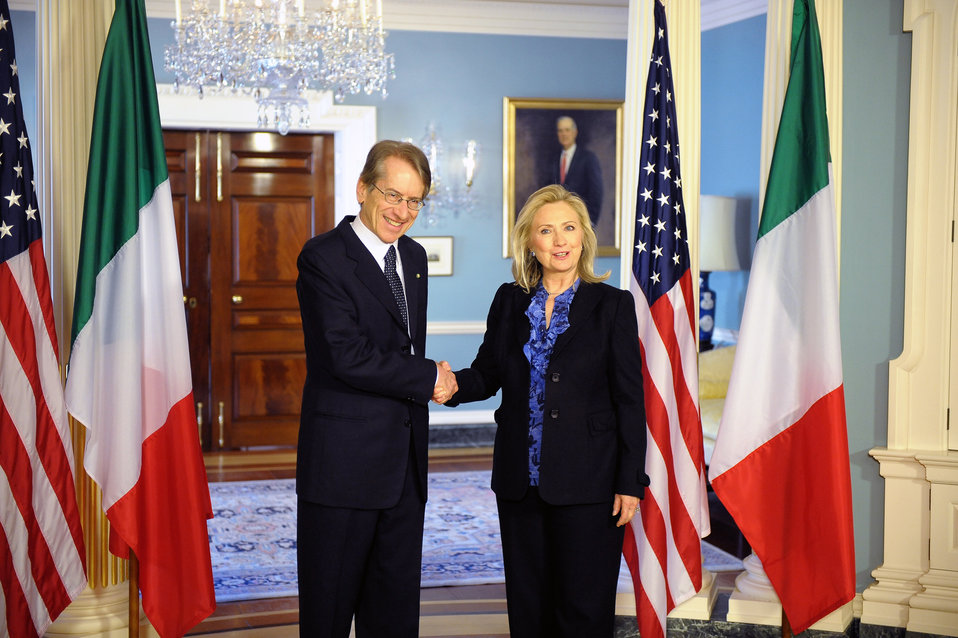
Secretary Clinton Shakes Hands With Italian Foreign Minister Terzi

U.S. Secretary of State Hillary Rodham Clinton shakes hands with Italian Foreign Minister Giulio Terzi di Sant’Agata at the U.S. Department of State in Washington, D.C., on February 9, 2012.